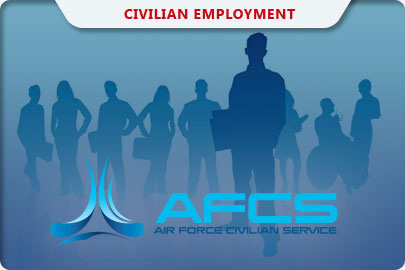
Filling civilian vacancies easier with advanced recruiting, online resources

Proactive steps by hiring managers will help Air Force leaders' efforts to streamline and expedite the hiring process for the civilian workforce.